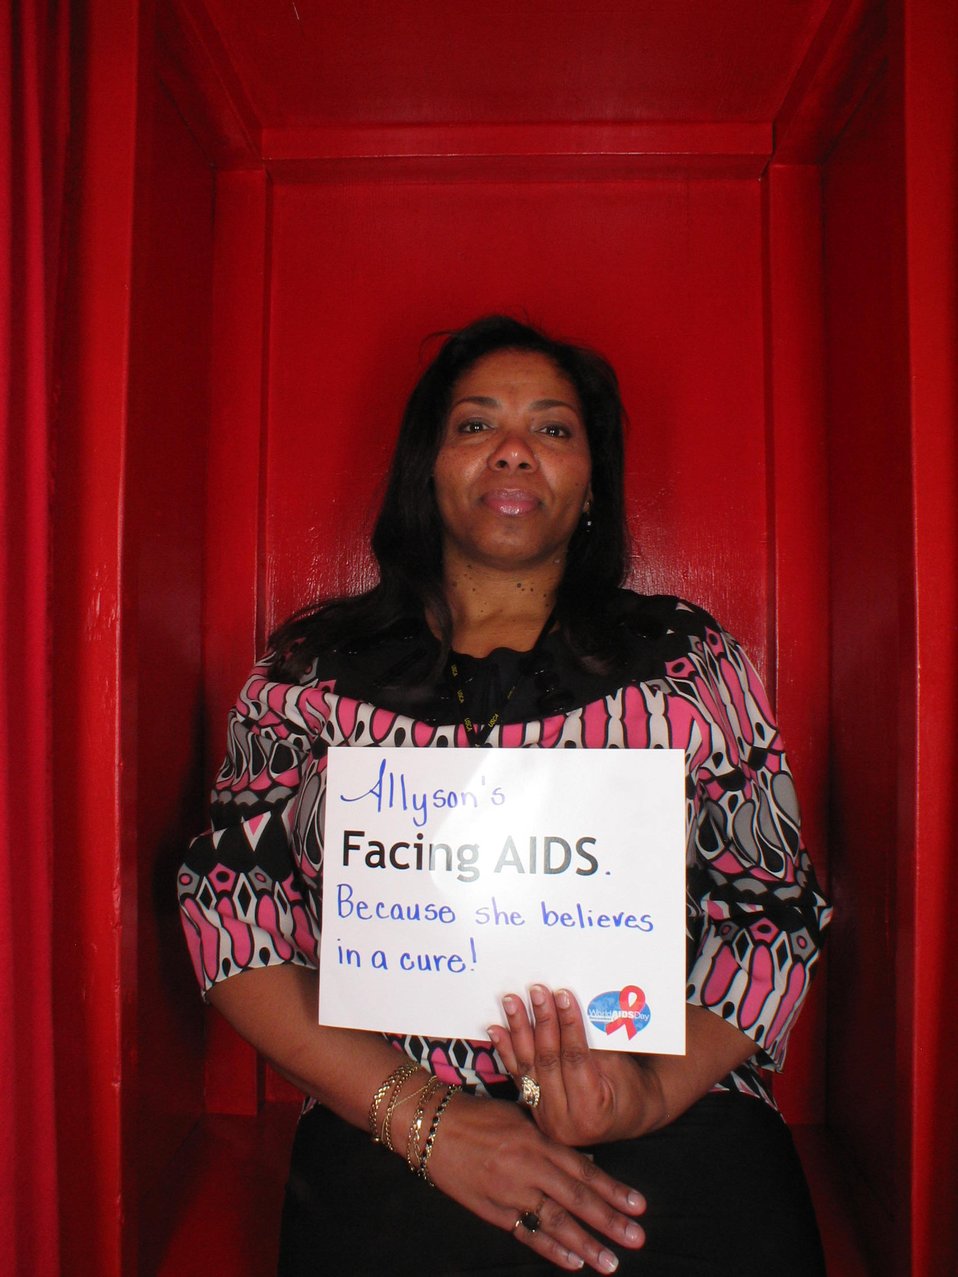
Facing AIDS because she believes in a cure.